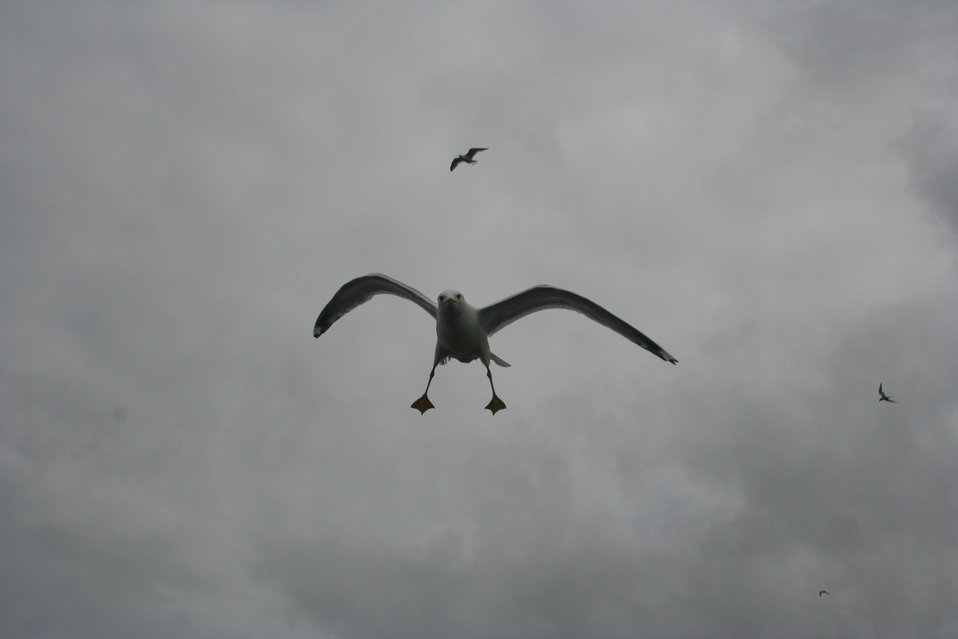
Gull attack

USFWS Yukon Delta NWR
Watch out for those feet!!